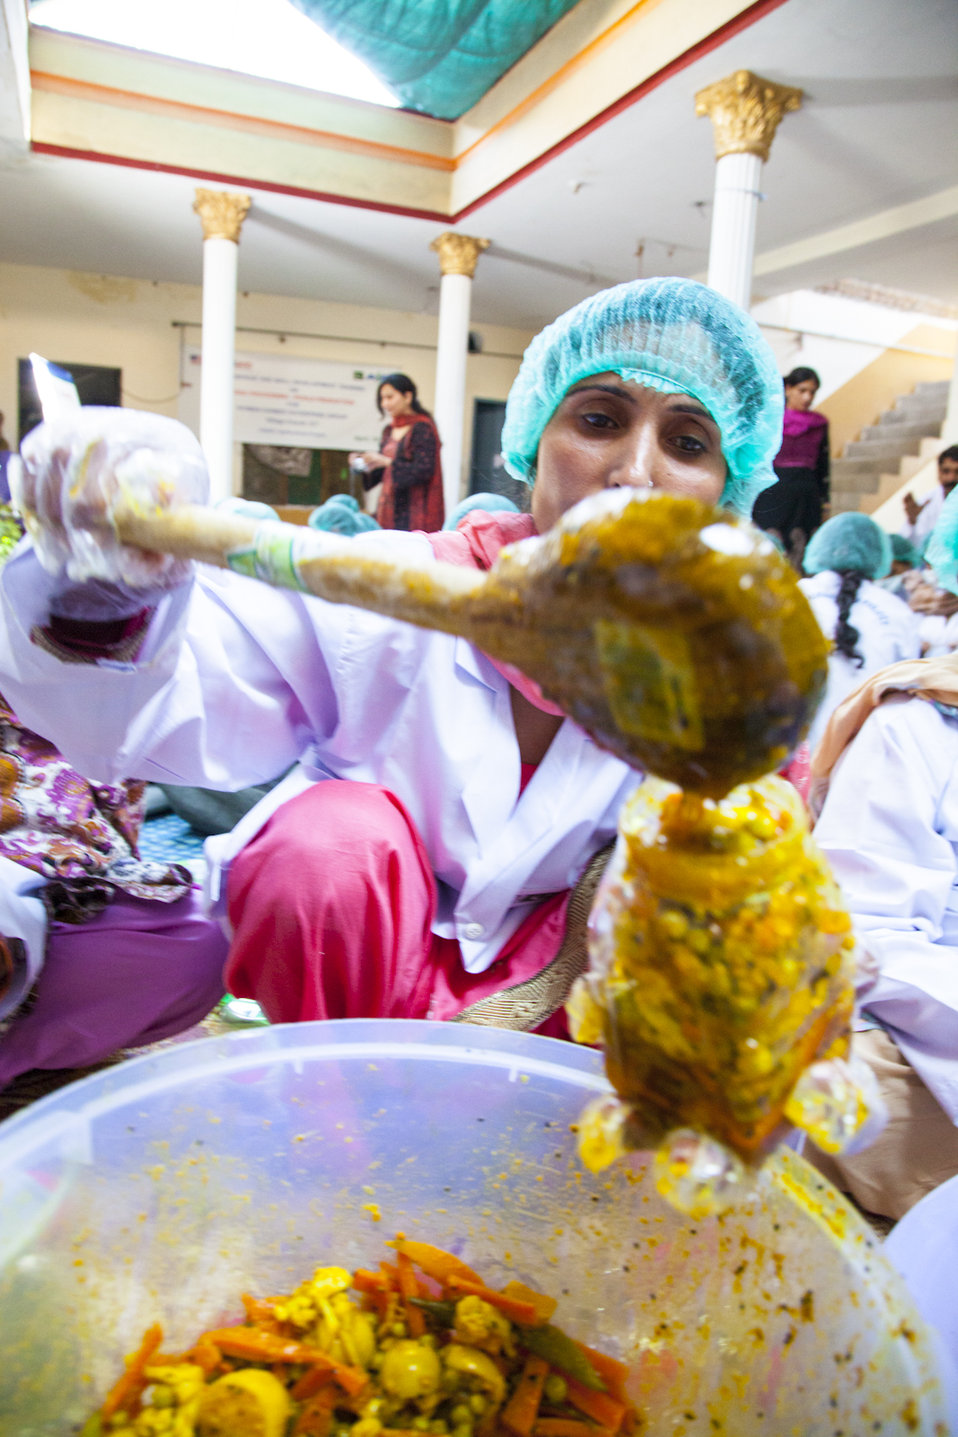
USAID's Agribusiness Project Women FEG for Food Processing - Pickle Production at Village Jabbi

www.usaid.gov/pk/db/sectors/growth/project 750.html